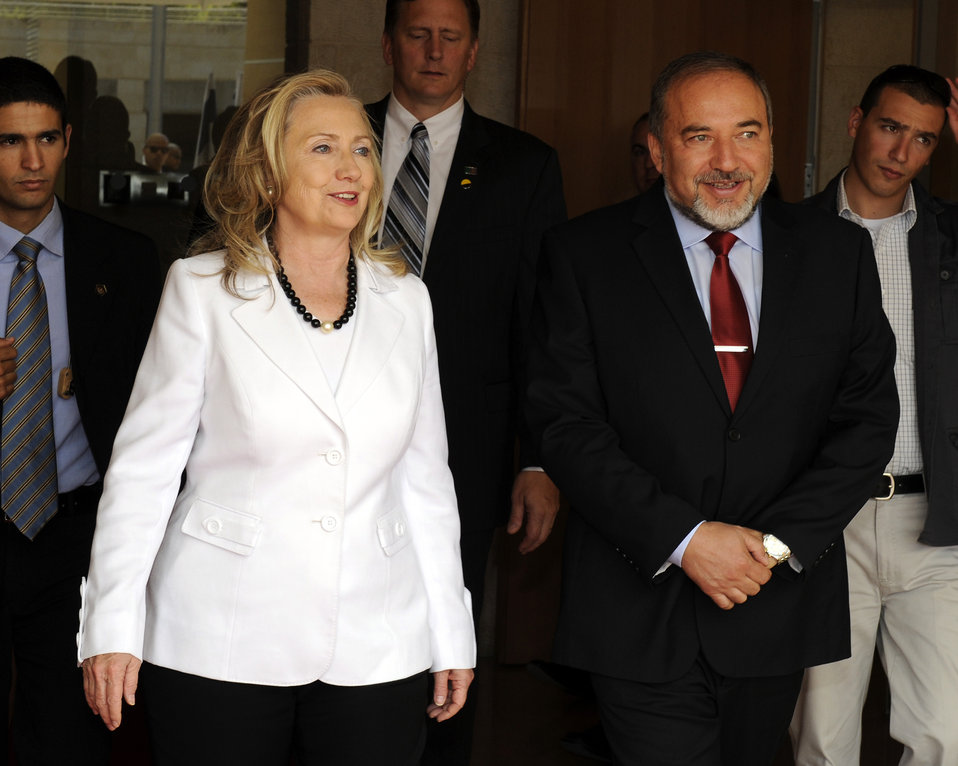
Secretary Clinton With Israeli Foreign Minister Lieberman

U.S. Secretary of State Hillary Rodham Clinton meets with Israeli Foreign Minister Avigdor Lieberman in Jerusalem on July 16, 2012.